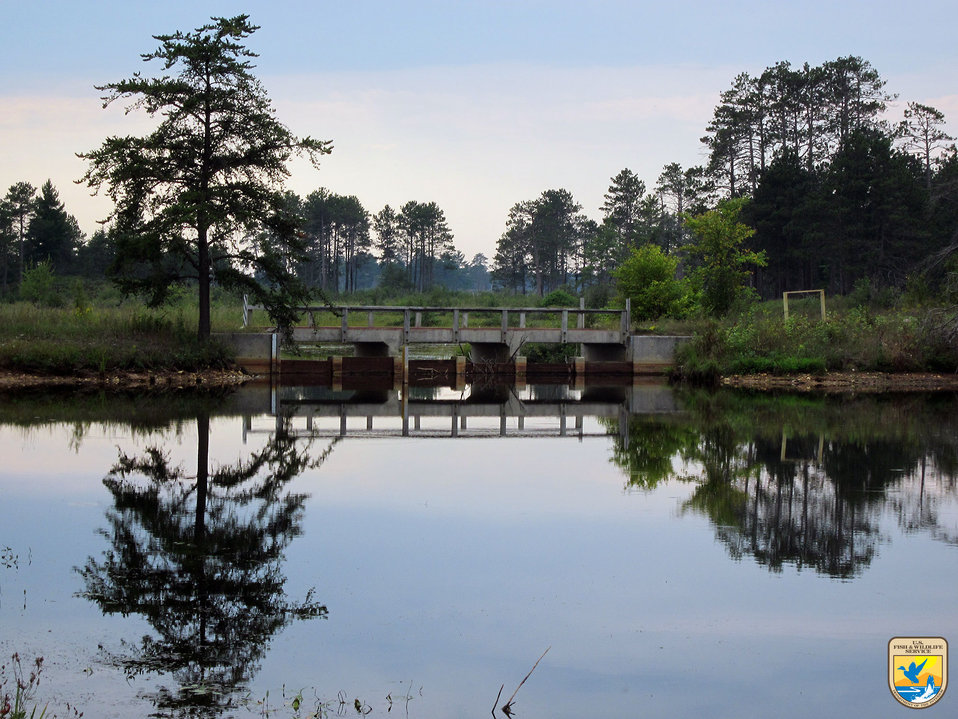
Calm Day - Region 3

A calm day at Seney National Wildlife Refuge in Michigan